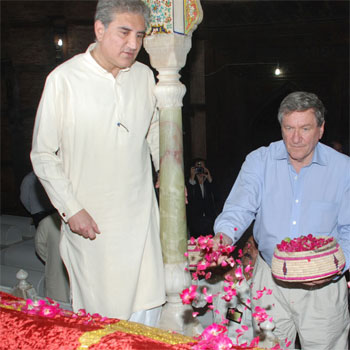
Pakistani Foreign Minister Qureshi and Special Representative Holbrooke Visit the Shah Rukn-e-Alam Shrine

Pakistani Foreign Minister Shah Mehmud Qureshi and U.S. Special Representative for Afghanistan and Pakistan Richard C. Holbrooke visit the Shah Rukn-e-Alam shrine in Multan, Pakistan, on September 16, 2010.